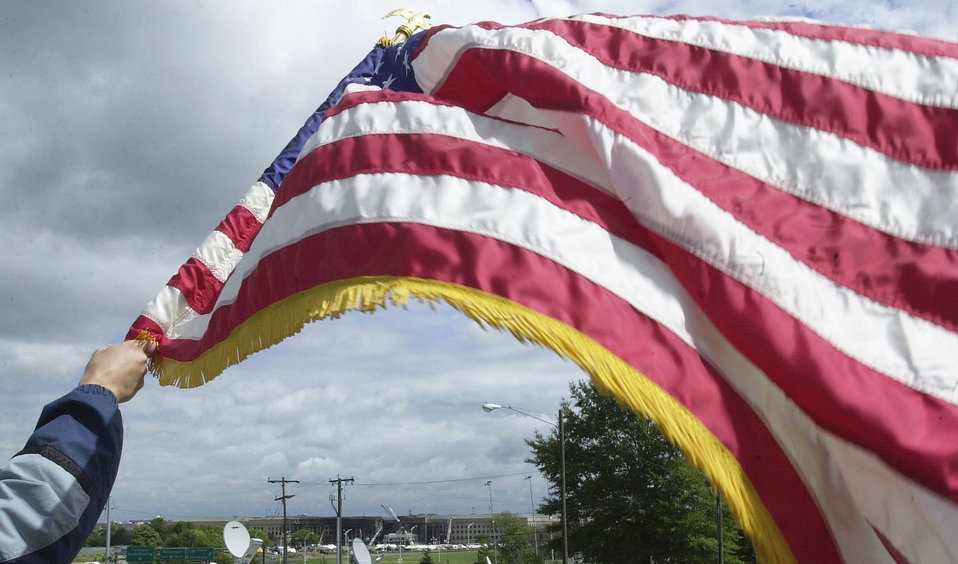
National Day of Prayer and Remembrance

WASHINGTON -- Memorial services were held on the grounds overlooking the Pentagon as part of the Sept. 14, National Day of Prayer and Remembrance. President George W. Bush declared the day in the wake of suspected terrorist attacks on Sept. 11, which resulted in extensive loss of life and damage to the Pentagon and the twin towers of the World Trade Center in New York City.